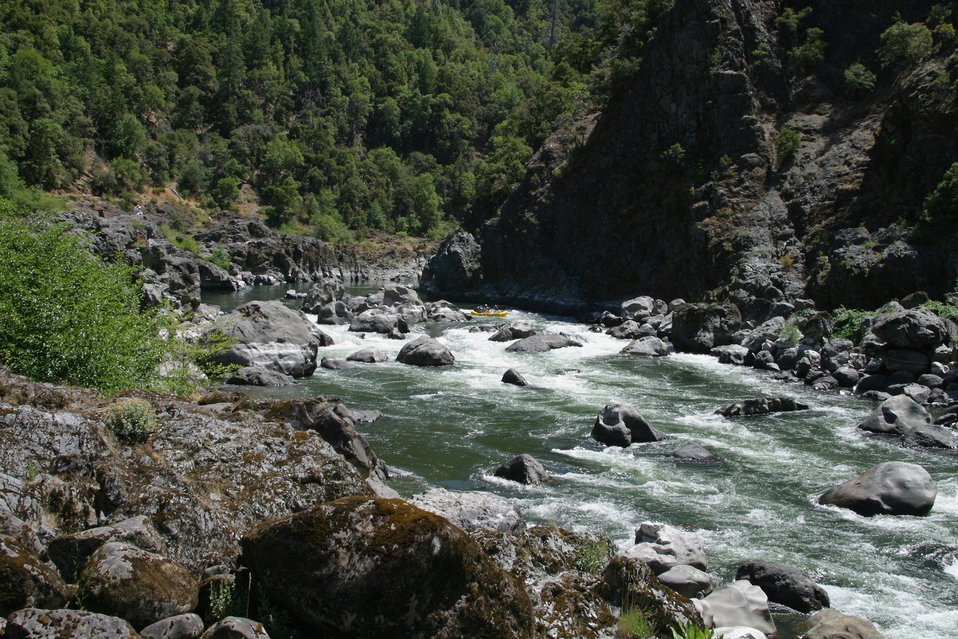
Blossom Rapids.